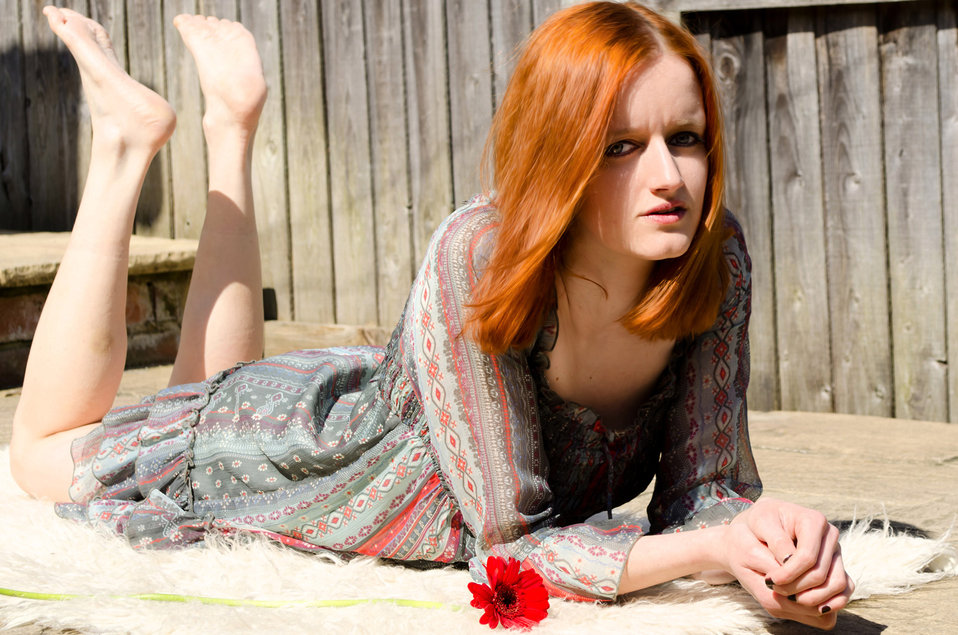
Woman - fashion.